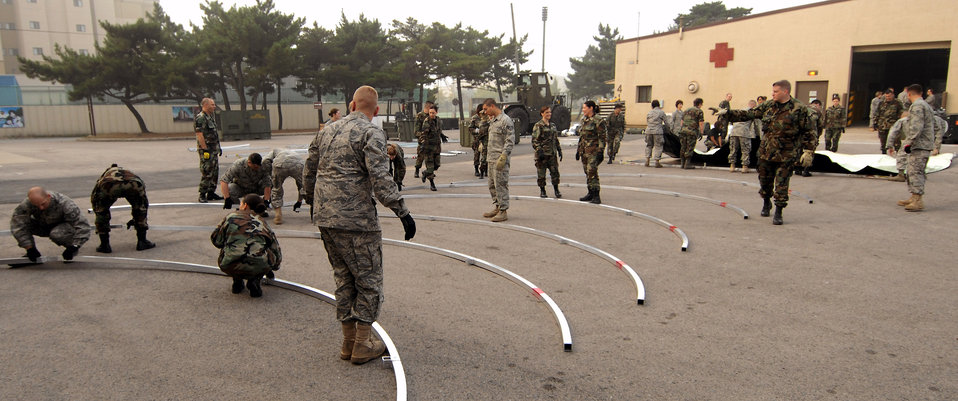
Reserve medics train at Kunsan

Reserve Airmen construct a medical staging facility Oct. 21 at Kunsan Air Base, South Korea. The medical reservists are deployed from Luke Air Force Base, Ariz. and Westover Air Force Base, Mass.